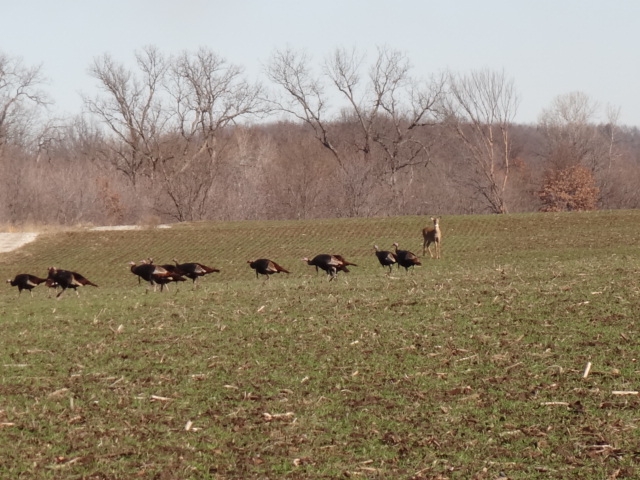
Whitetail Deer and Wild Turkeys

This whitetail deer was seen feeding on a winter bean field with a rafter (group) of wild turkeys.